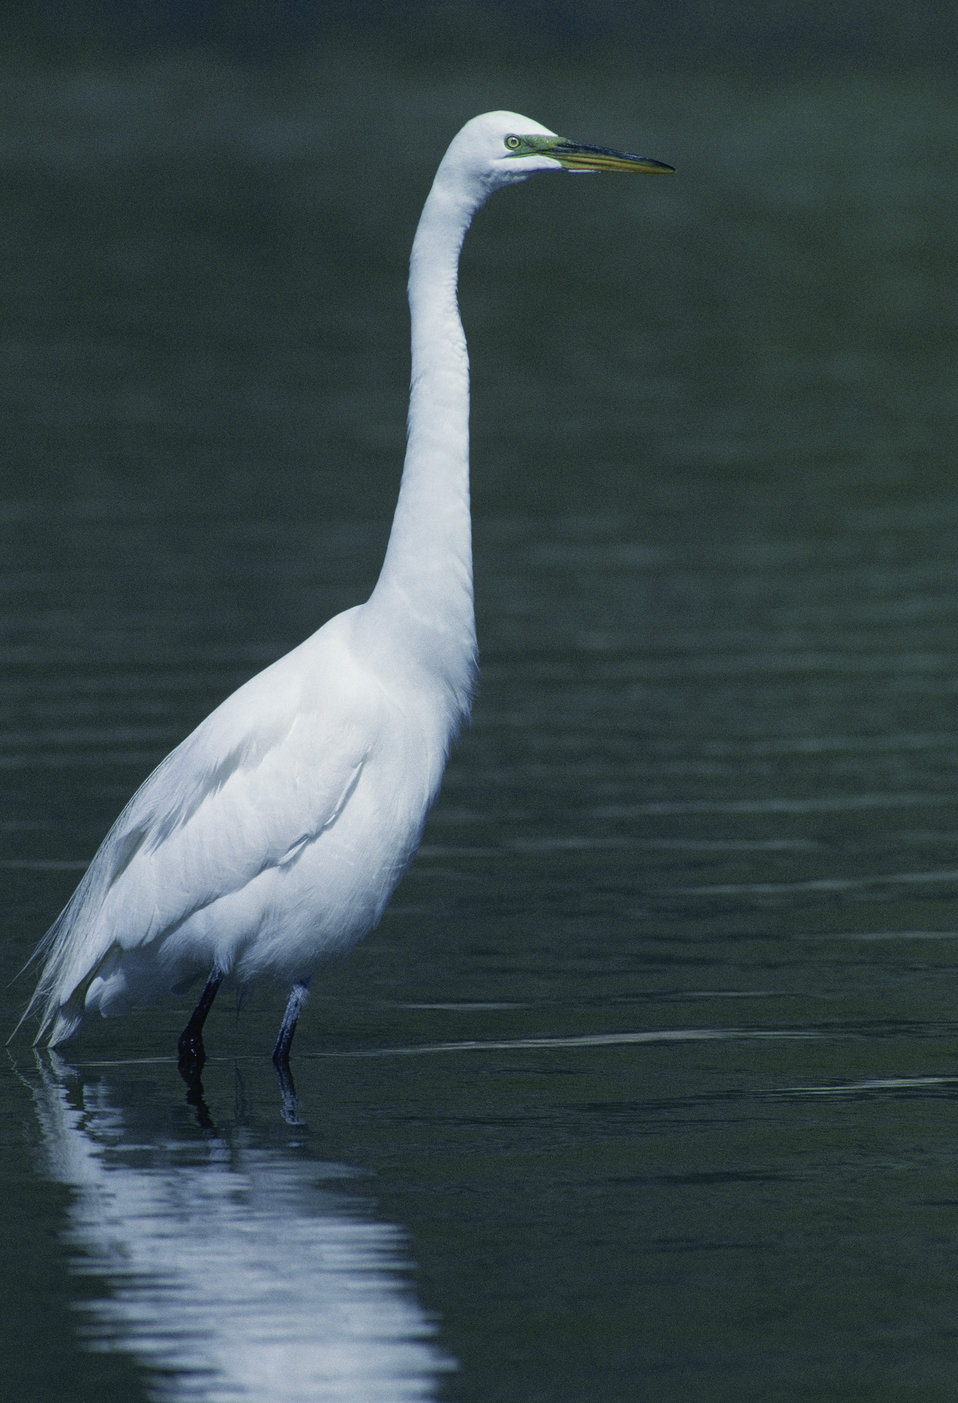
Great egret

Bird standing alertly almost knee deep in quiet water in Siskiyou County, California. Vertical.